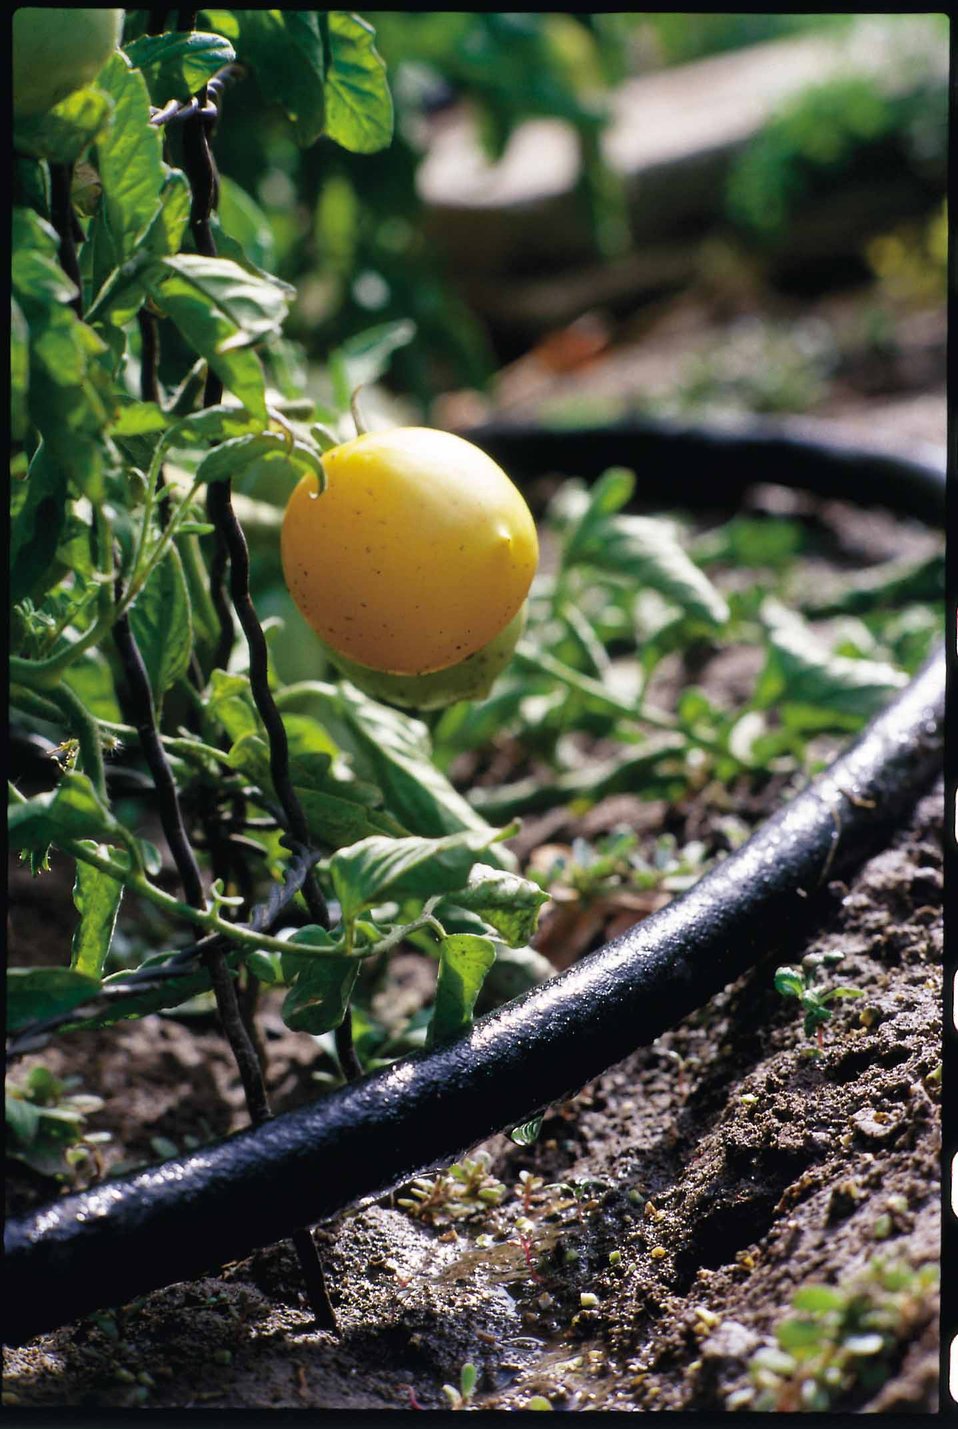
Drip irrigation is an excellent way to conserve water in gardens.